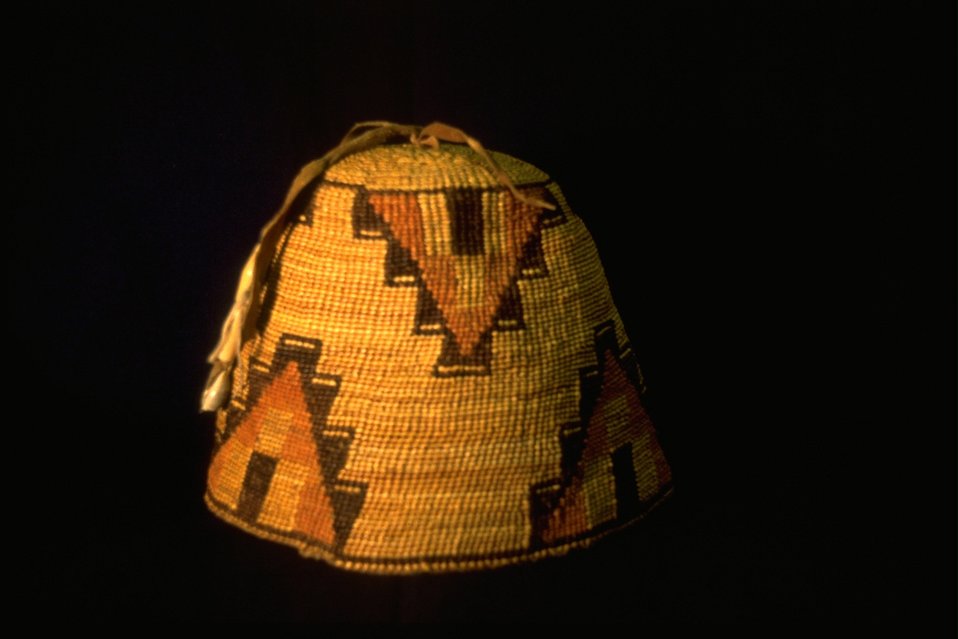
Native American Artifact at NHOTIC.